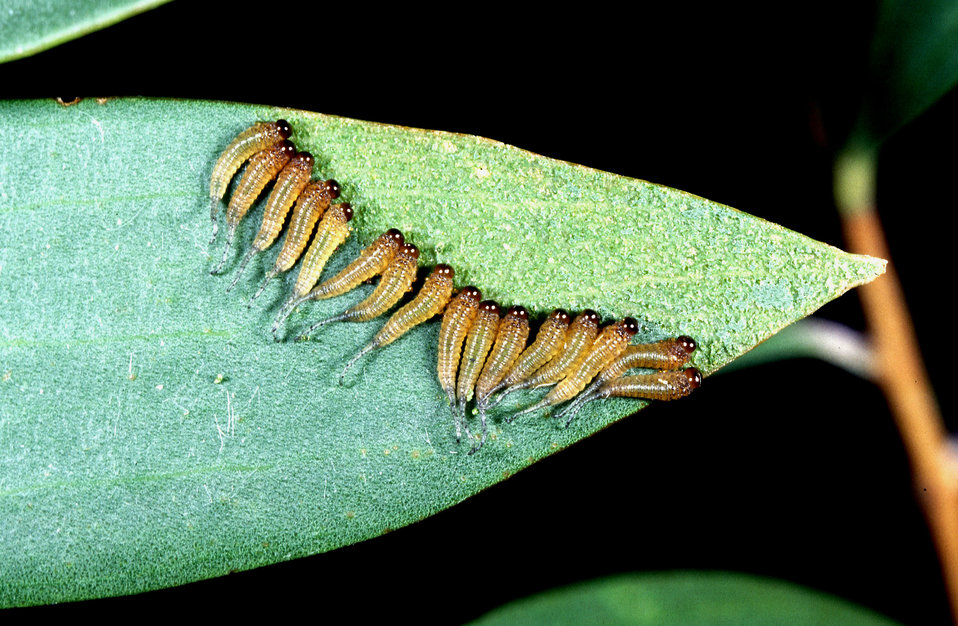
Day-old sawfly larvae devour a melaleuca leaf in skirmish-line fashion.